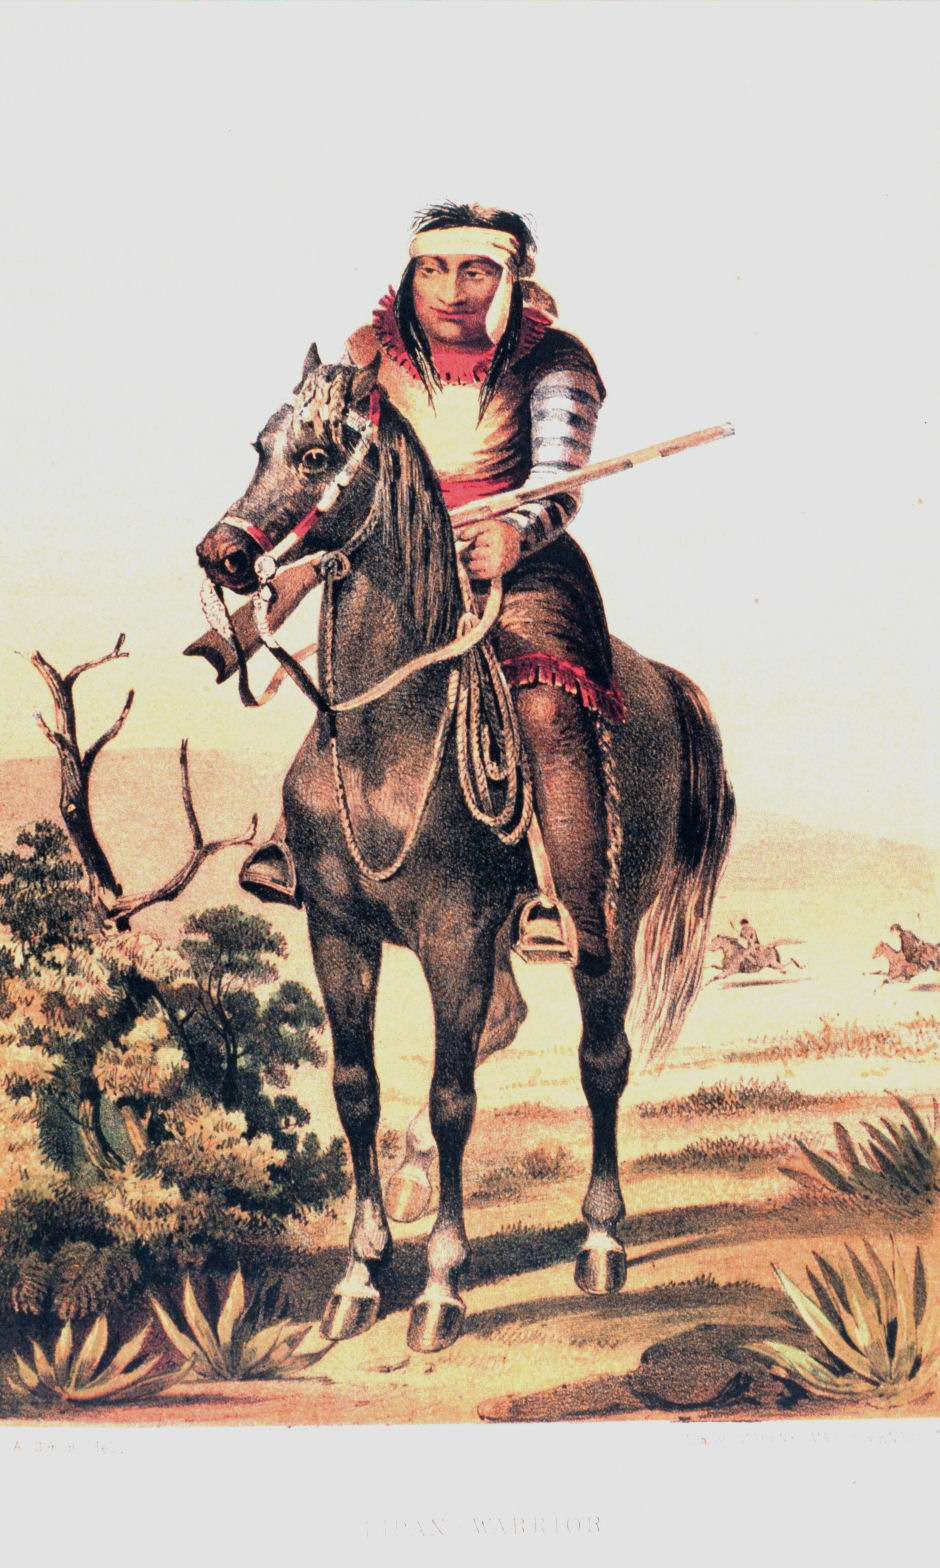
Lipan warrior. In: 'United States and Mexican Boundary Survey. Report of William H. Emory ....' Washington. 1857. Volume I. P. 79. Library Call Number F786 .U45 1857.